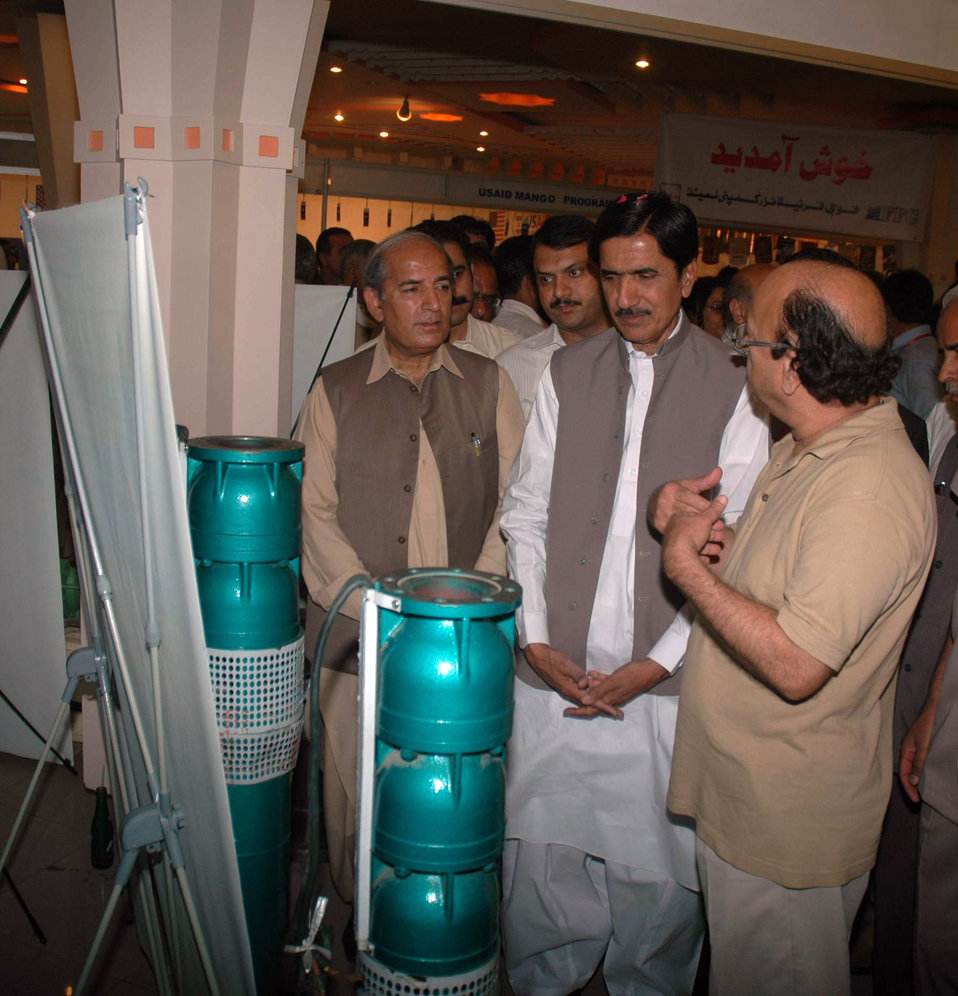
Jang Agriculture Expo

Multan, June 4, 2011 – A tubewell expert explains USAID’s Tubewell Efficiency Improvement Program benefits for the farmers and agriculture sector to Malik Ahmad Ali Aulakh, Punjab Minister for Agriculture at a USAID booth at the Jang Agriculture Expo.